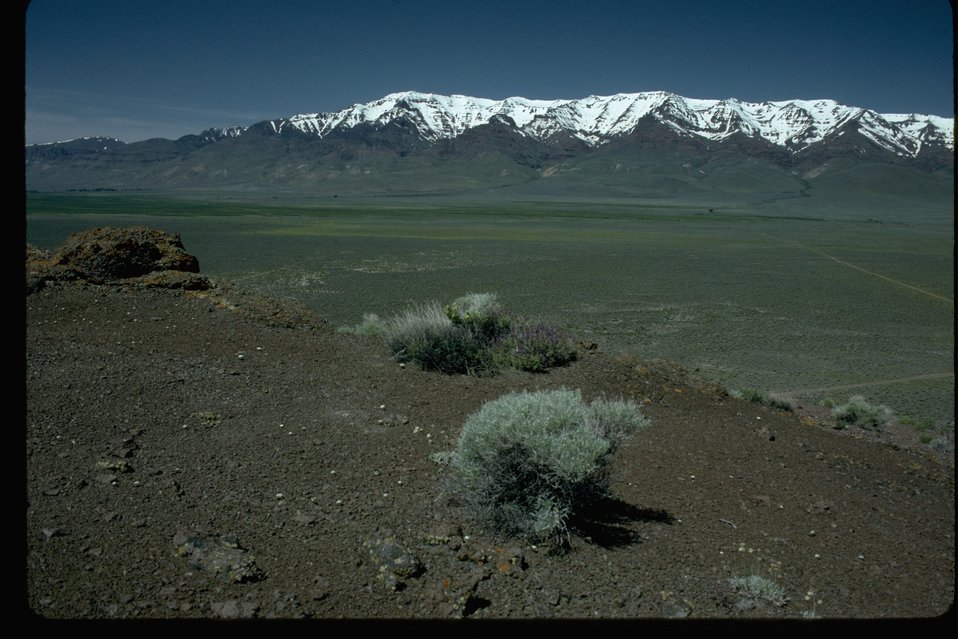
East face of Steens Mountain from Mickey Basin Road at the north end of the Alvord Desert.